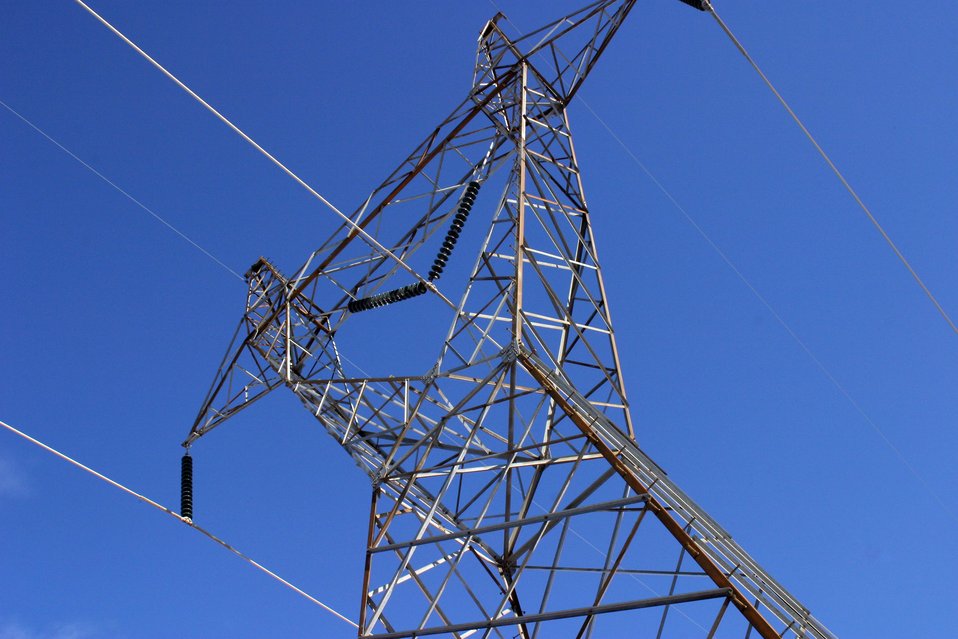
Power lines in Gaylord, Michigan.